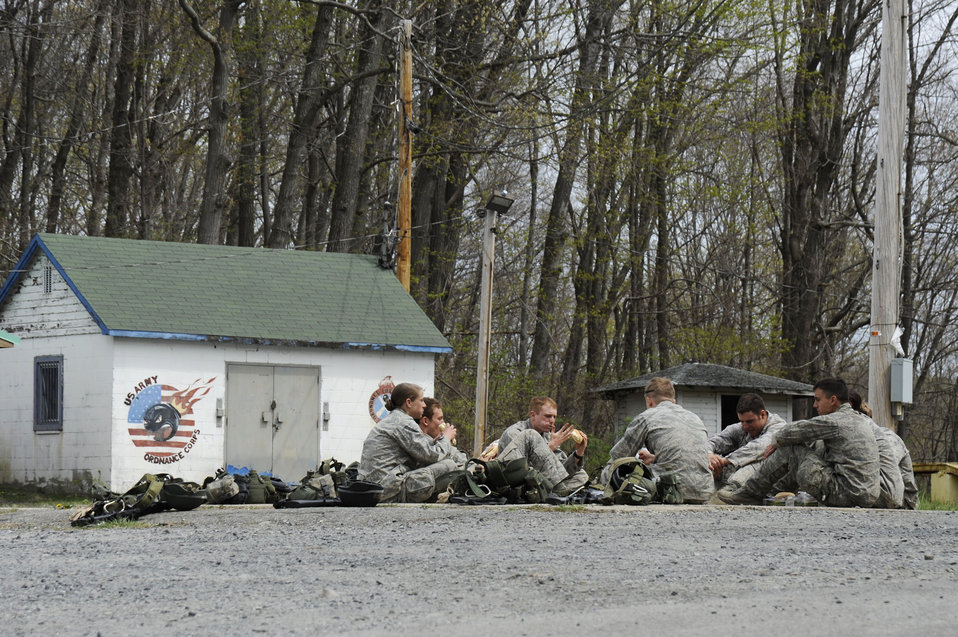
2012 Sandhurst Competition

United States Air Force Academy cadets break for lunch during training April 18, 2012, for the 2012 Sandhurst Competition at the U.S. Military Academy in West Point, N.Y. The Sandhurst Competition was designed to promote military excellence among cadets. They participated in the two-day event that tested their physical and intellectual strength.